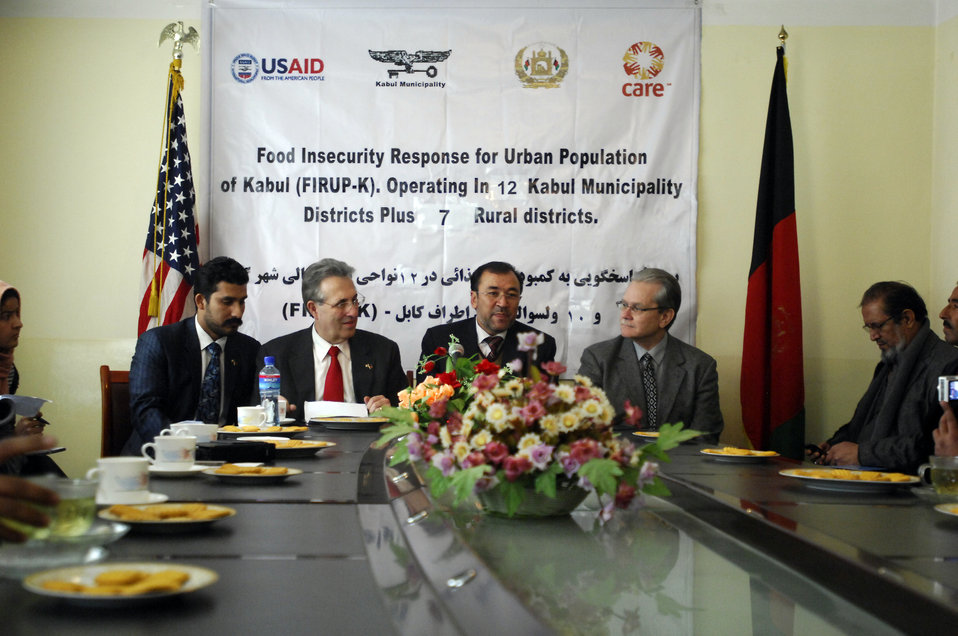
Care78 (1)